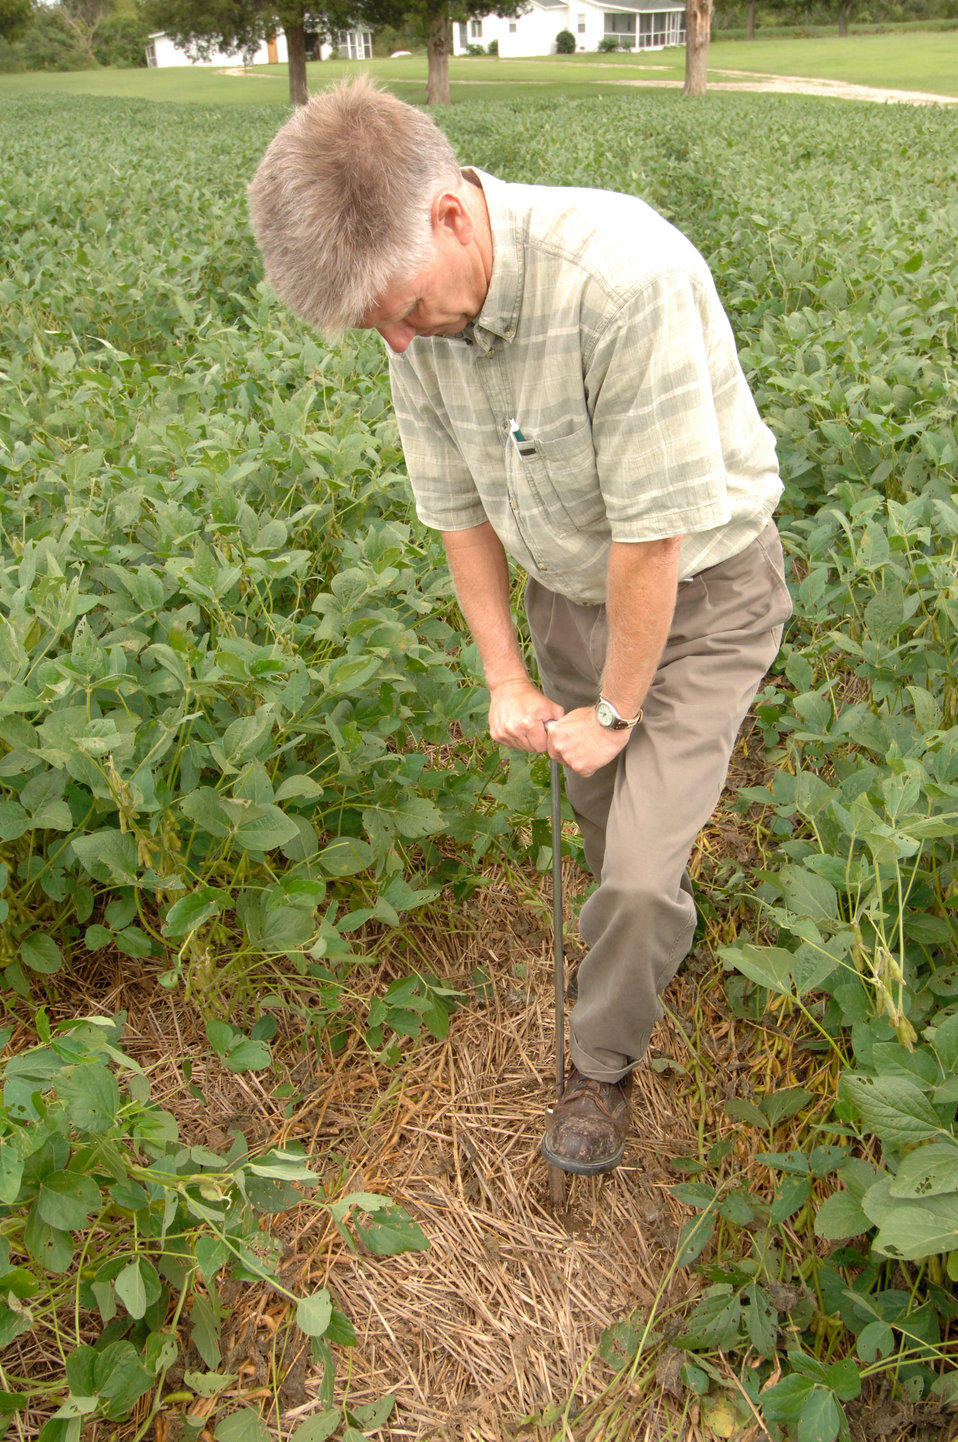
U.S. Department of Agriculture (USDA) Natural Resource Conservation Service (NRCS) crop consultant draws a soil sample to test the nitrogen availability in the soil on a Virginia farm on September 11, 2008. This nitrogen test is meant to decide whether and how much nitrogen the growing crop needs for optimum production and only the amount of nitrogen needed will be applied.